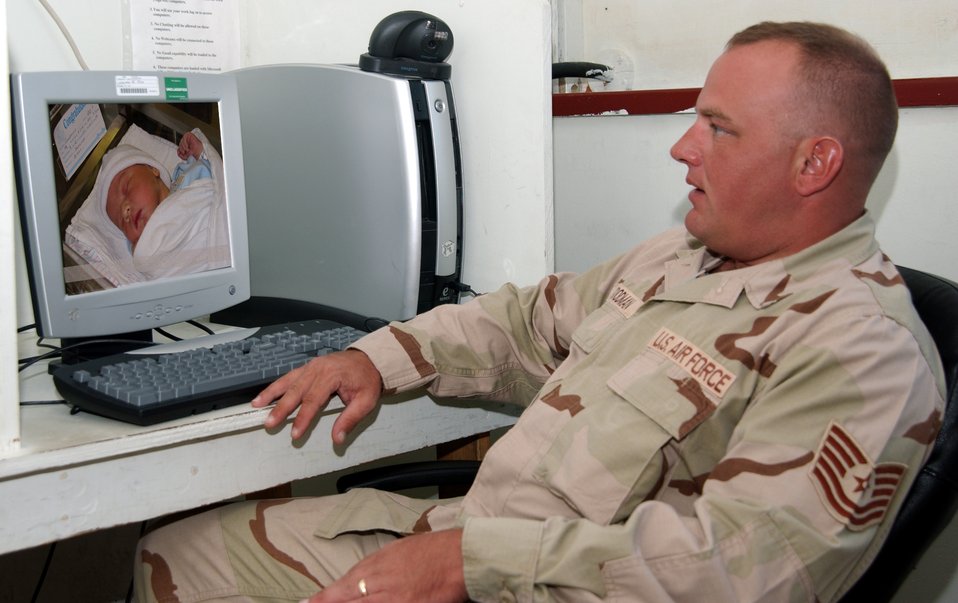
That's my baby

OPERATION ENDURING FREEDOM -- Tech. Sgt. Troy Goodman inspects the newest member of his family via Webcam Aug. 12. Sergeant Goodman was able to watch the live birth over the Internet. He is the noncommissioned officer in charge of munitions inspections for the 40th Expeditionary Munitions Flight.